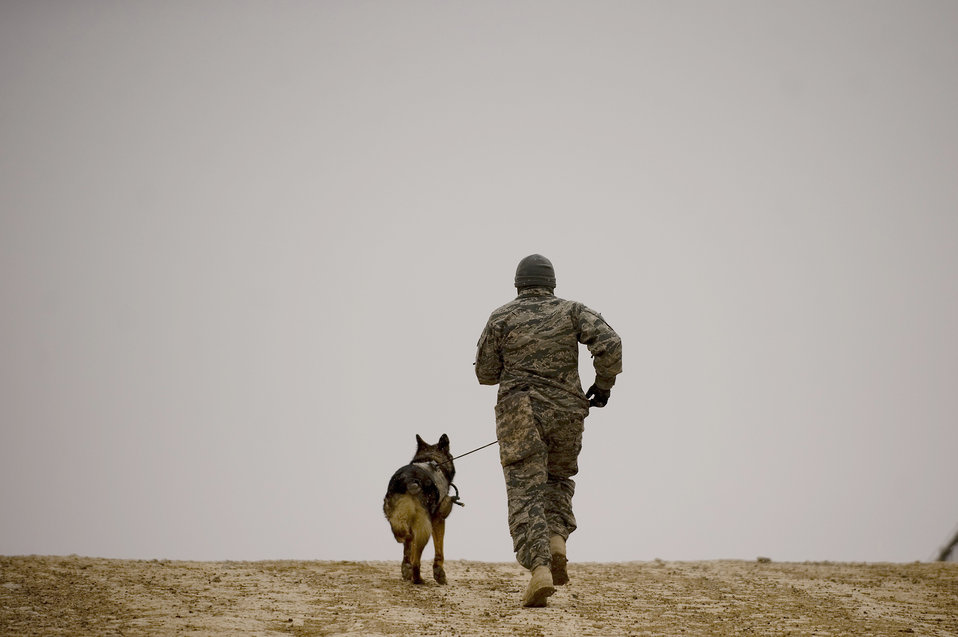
Combined Team Zabul

Staff Sgt. Pascual Gutierrez takes a brisk walk with Edy, his military working/patrol explosive detection dog, after the dog successfully sniffed out devices during an explosive device detection training session Feb. 18, 2011, at Forward Operating Base Lagman, Afghanistan. Sergeant Gutierrez and Edy are members of Combined Team Zabul.